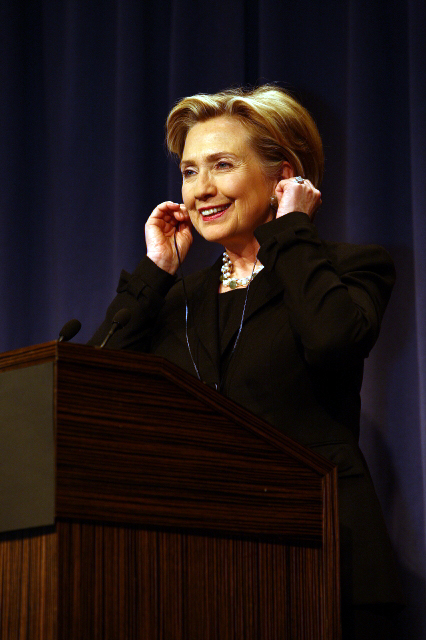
Press Conference With Russian Foreign Minister

Press conference after dinner meeting between U.S. Secretary of State Hillary Rodham Clinton and Russian Foreign Minister Sergey Lavrov in Geneva, Switzerland March 6, 2009.